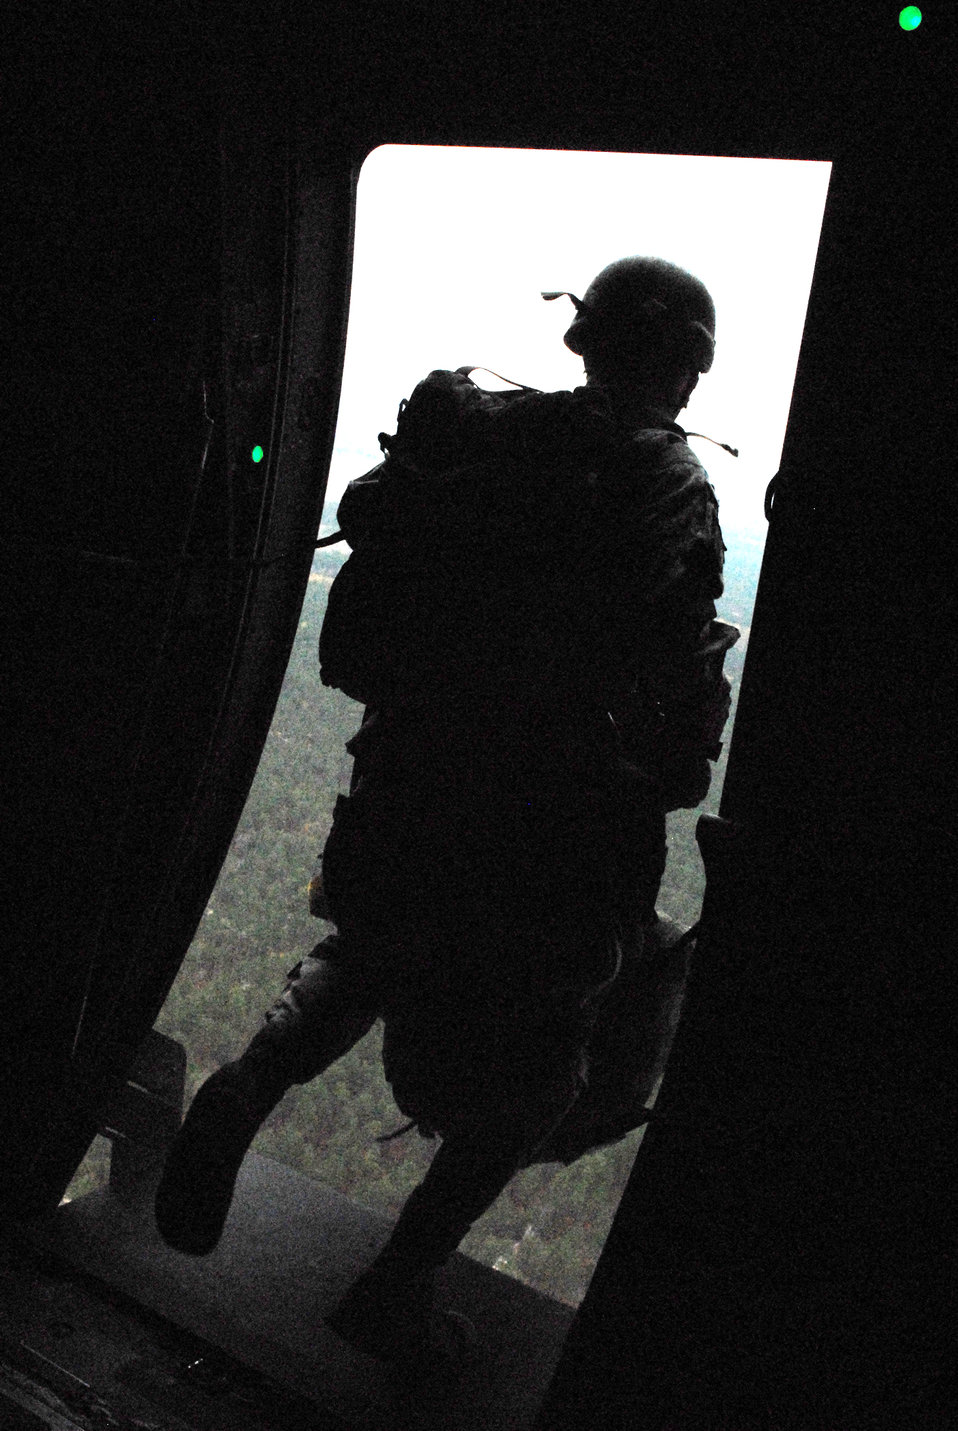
Little Rock officials lead joint force training effort at exercise

A paratrooper from the 82nd Airborne Division's Advanced Airborne school at Fort Bragg, N.C., jumps out of a C-130 Hercules as part of Joint Forcible Entry Exercise 10-01 Oct. 28, 2009, at Pope Air Force Base, N.C. The JFEX focused on cohesive training between the Air Force and Army to re-establish forcible entry capability through airpower.